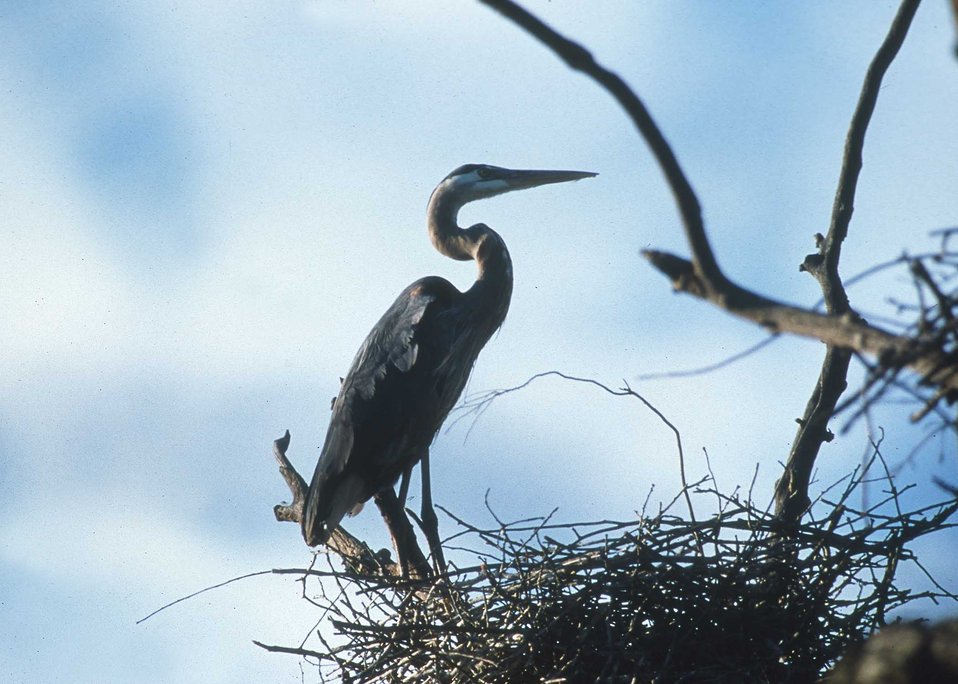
Great Blue Heron on nest in a rookery in the prairie pothole region of eastern South Dakota.